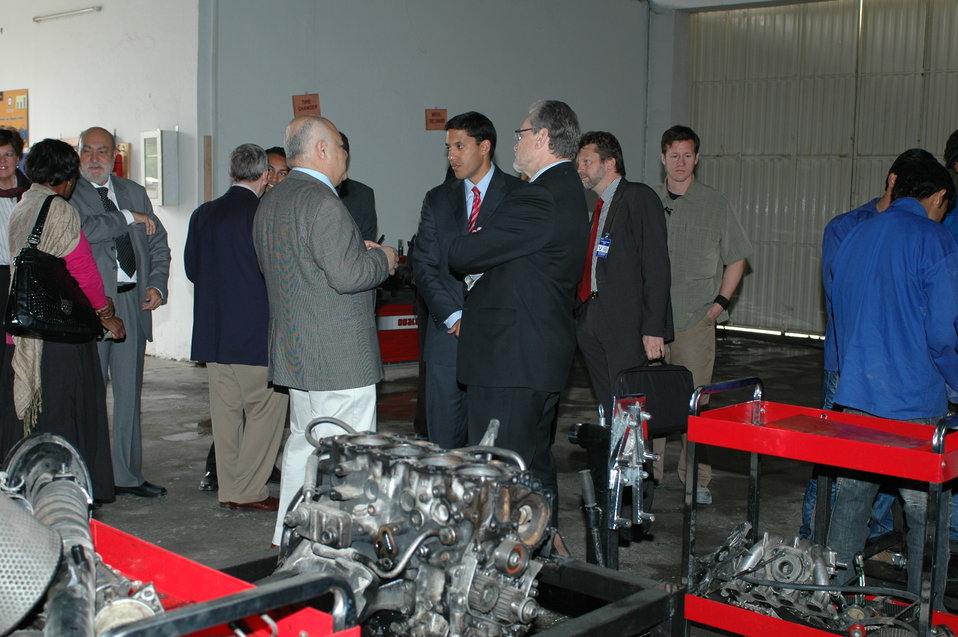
Dr Shah Visits Votech in Kabul